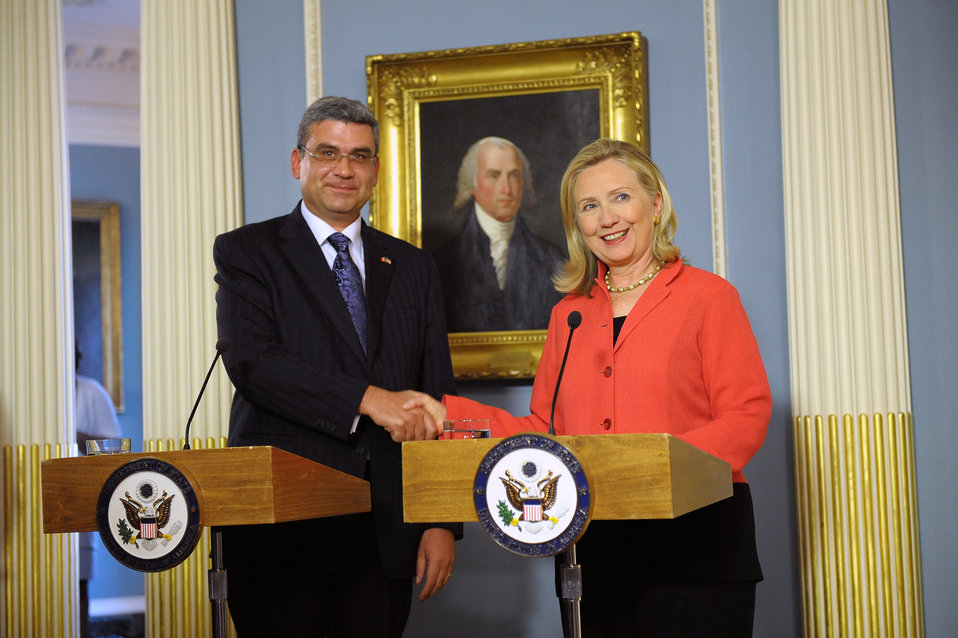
Secretary Clinton Shakes Hands With Romanian Foreign Minister Baconschi

U.S. Secretary of State Hillary Rodham Clinton shakes hands with Romanian Foreign Minister Teodor Baconschi after their joint press conference and signing of the Ballistic Missile Defense Agreement, in the Treaty Room at the U.S. Department of State in Washington, D.C., on September 13, 2011.